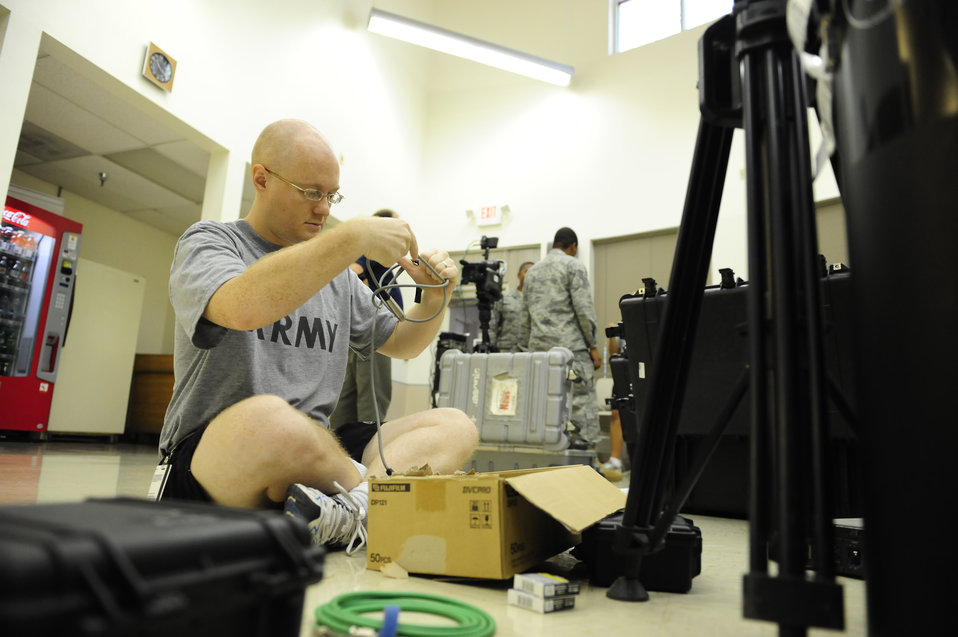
Holiday Greetings teams ready to deploy

Army Spc. Andrew Branstad goes through equipment he'll need for his Southwest Asia leg of this year's holiday greetings taping Aug. 27, 2009. Thousands of greetings will be sent to virtually every television and radio station in America for airing from Thanksgiving through New Year's Day. Specialist Branstad is a broadcaster with the Joint Hometown News Service in San Antonio.